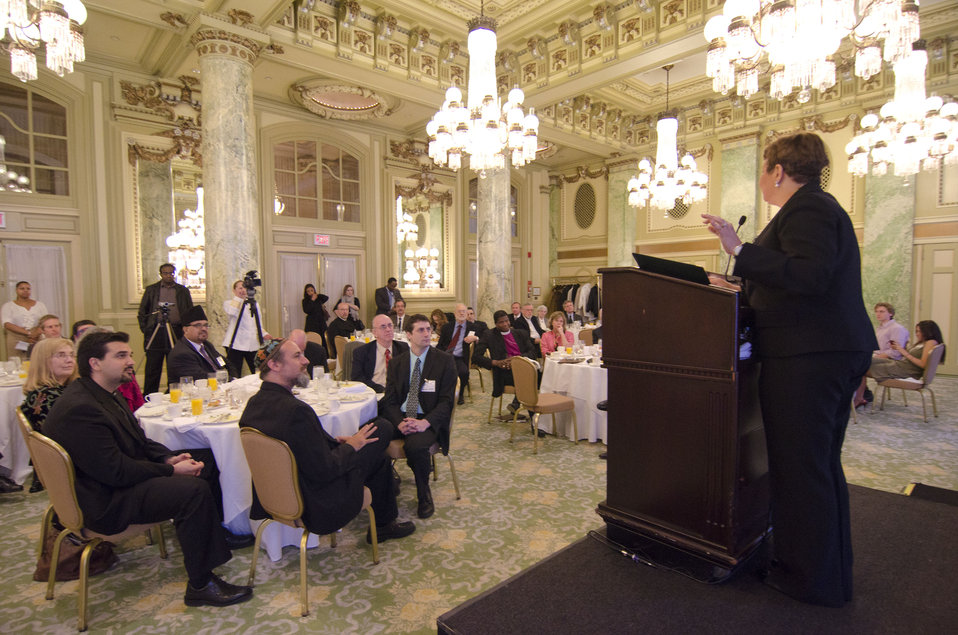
2011-05-05 NRCCCPrayerBreakfast 066

US EPA Administrator Lisa P Jackson addresses the room after accepting the Steward of God's Creation Award from the National Religious Coalition on Creation Care.